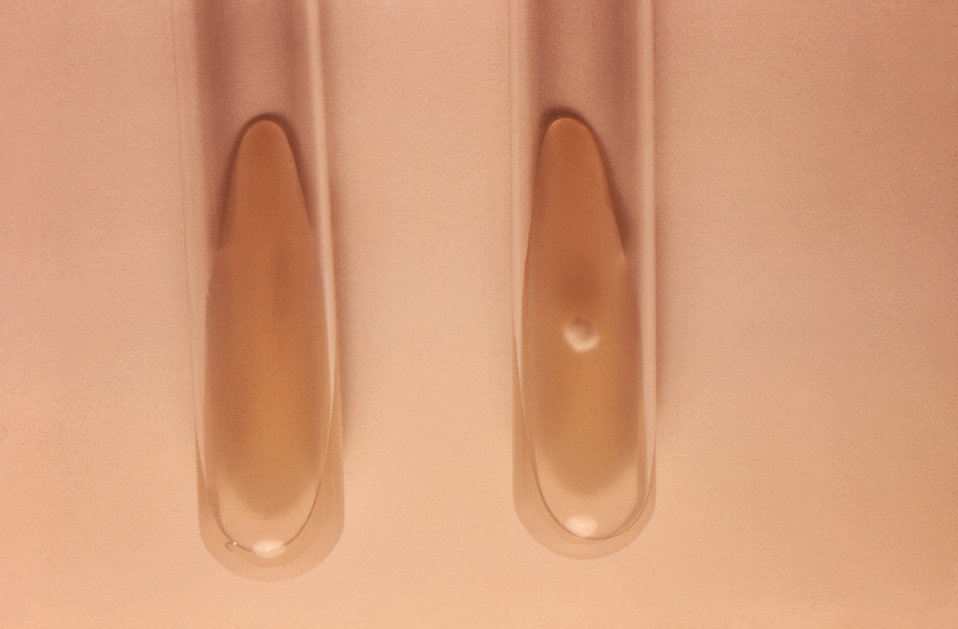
The two test tubes depicted here were being used to carry out a nutritional test involving the identification of various dermatophytic fungal organisms. In this particular instance, the dermatophyte, Trychophyton megninii, was being examined, and an inoculum had been added to two different growth medium, one within each tube. On the left, the medium consisted solely of an ammonium nitrate (NH4NO3) agar, while on the right, to the same agar medium, 0.2mg of the ammino acid histidine had been added. Note that with the addition of the nutrient histidine, the T. megninii organsms were thriving, and had created a single fungal colony atop the medium.